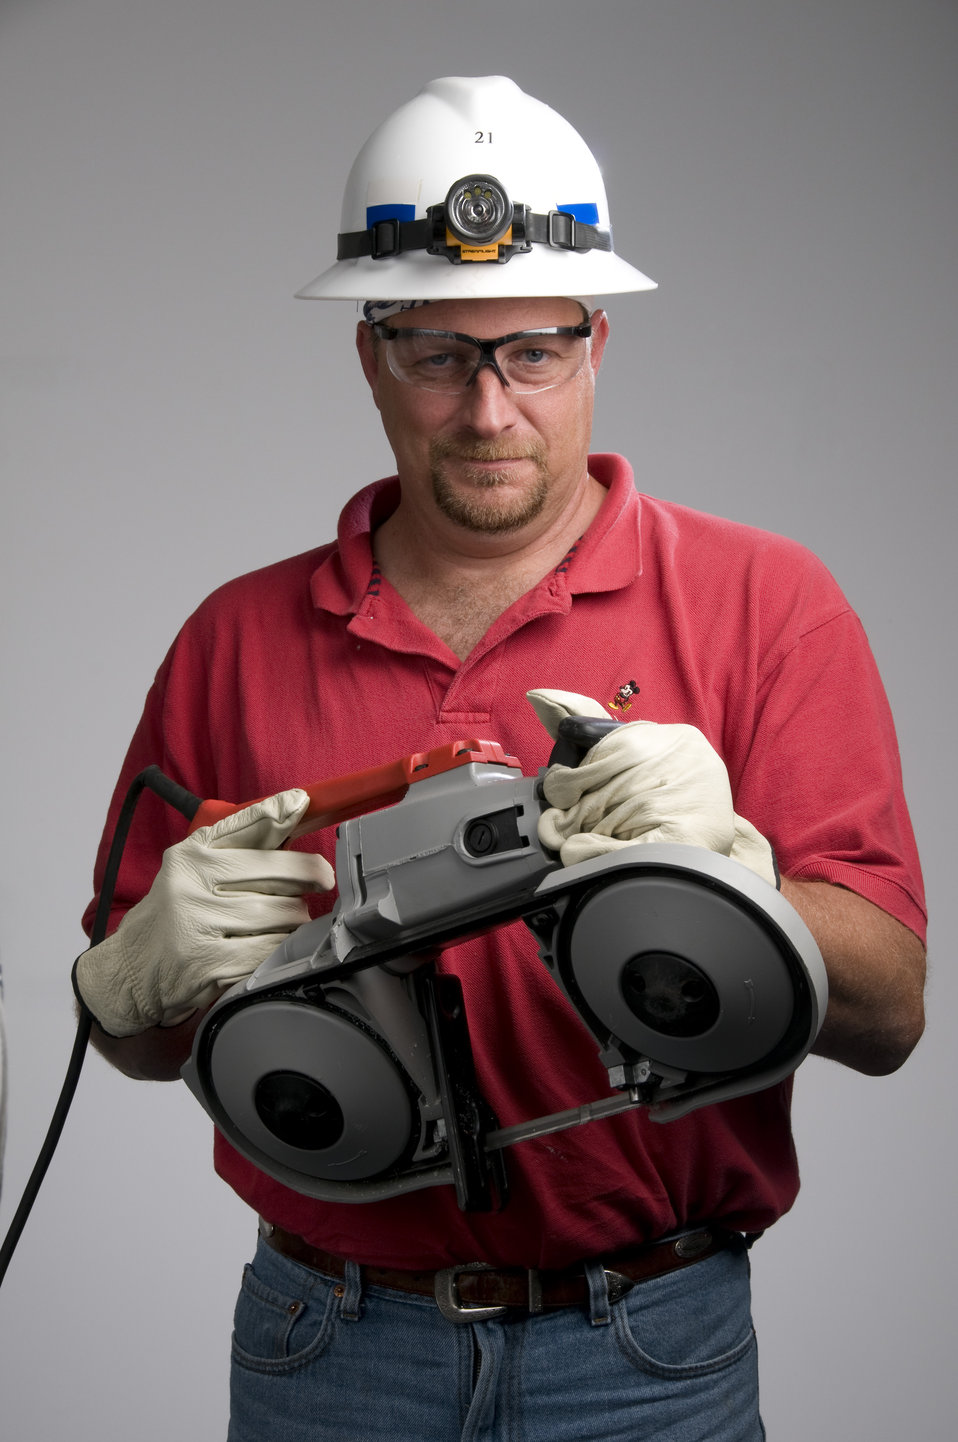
James Hall